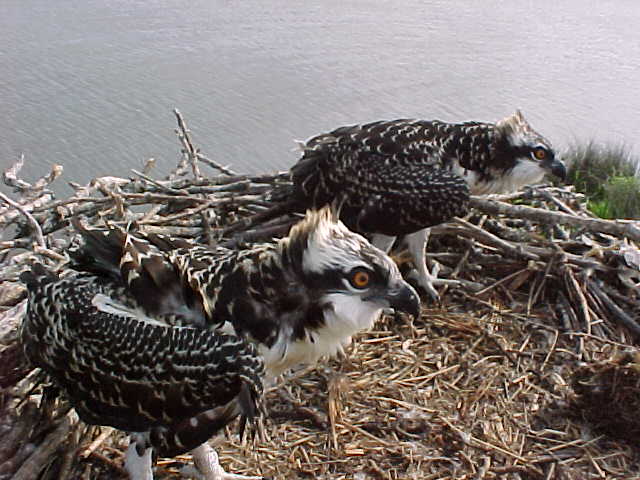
Young osprey at Back Bay National Wildlife Refuge in Virginia.